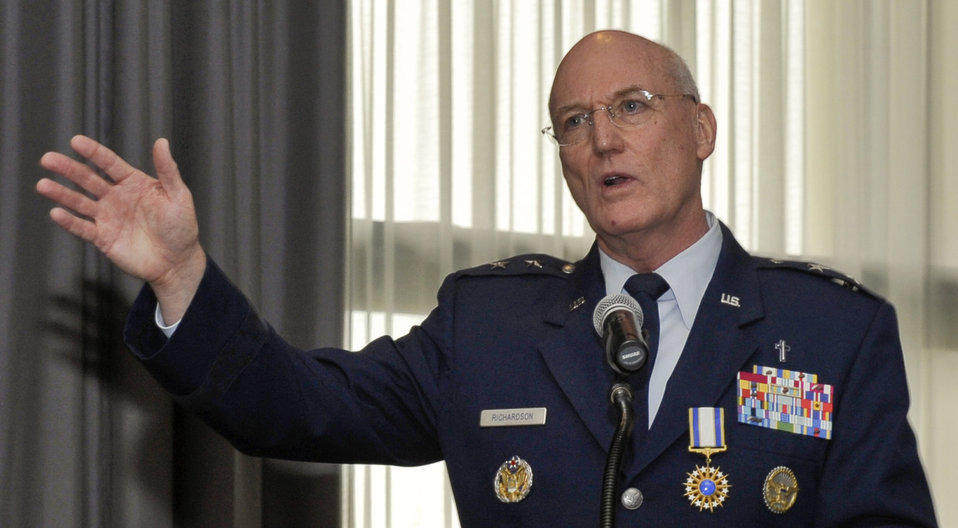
Top Air Force chaplain retires after 40-year career

Maj. Gen. Cecil Richardson speaks to attendees during his retirement ceremony April 30, 2012, at Joint Base Anacostia-Bolling, Washington, D.C. Air Force Chief of Staff Gen. Norton Schwartz hosted the event. Richardson was the Air Force chief of chaplains.